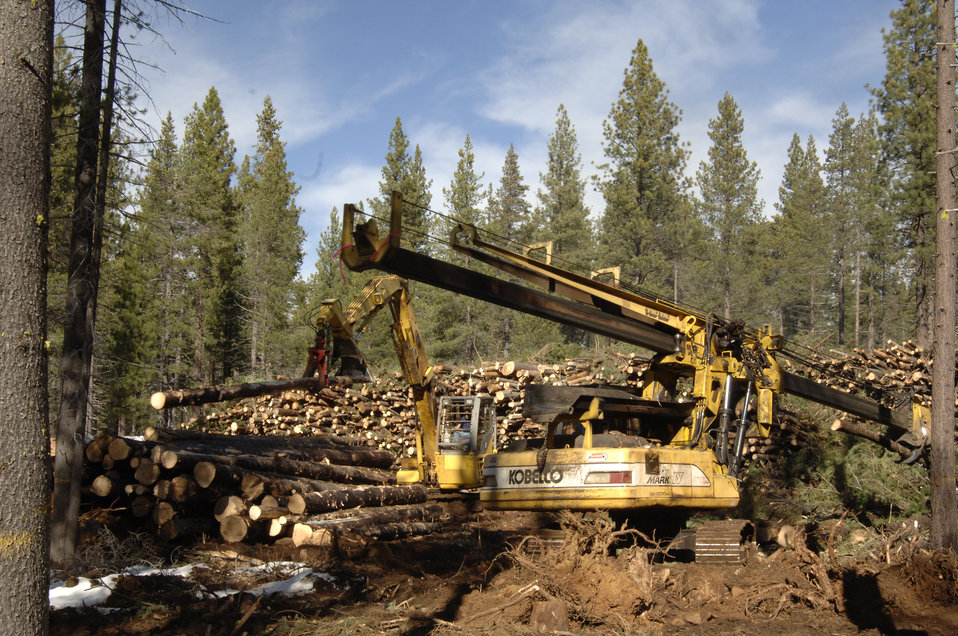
The U.S. Department of Agriculture (USDA) Forest Service (FS) is strongly committed to the management of the National Forests in an environmentally sound manner. The agency's top priority is to maintain and improve the health, diversity, and productivity of forest ecosystems for the enjoyment of current and future generations. Forest management includes guidance, administration, and support of the agency's forest products management and sales programs. Forest products include materials derived from a forest for commercial use such as lumber and paper, and also 'special forest products' such as medicinal herbs, fungi, edible fruits and nuts, and other natural products.